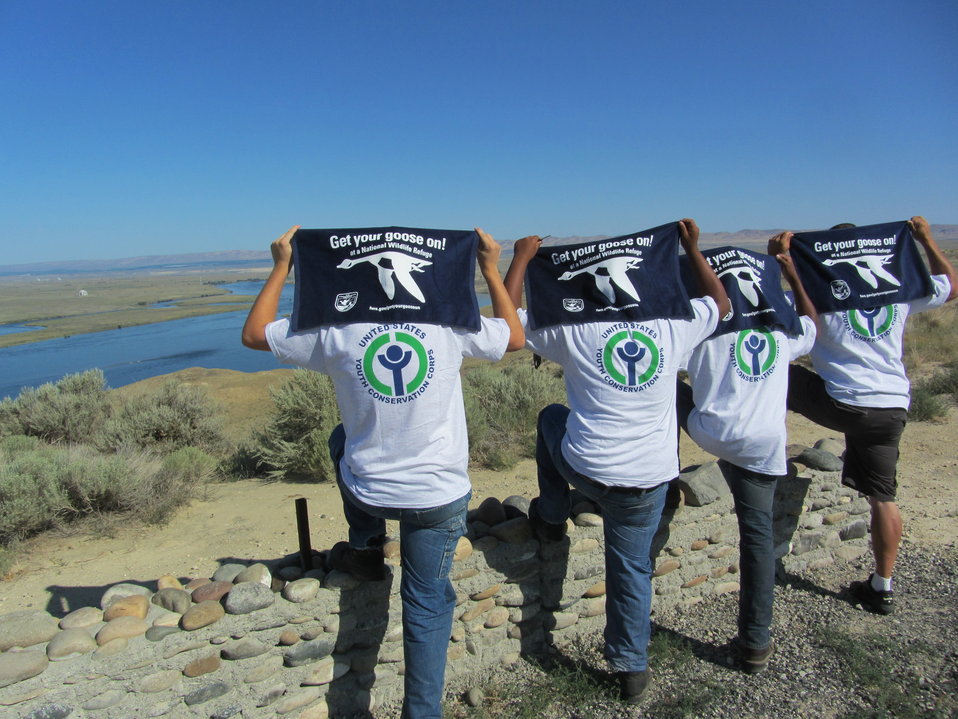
Get Your Goose On! - Columbia River Style

Youth Conservation Corps crew and leader (Wayne) from the McNary NWR at the White Bluffs Overlook on the Columbia River in Hanford Reach National Monument - the U.S. Fish and Wildlife Service's first National Monument!